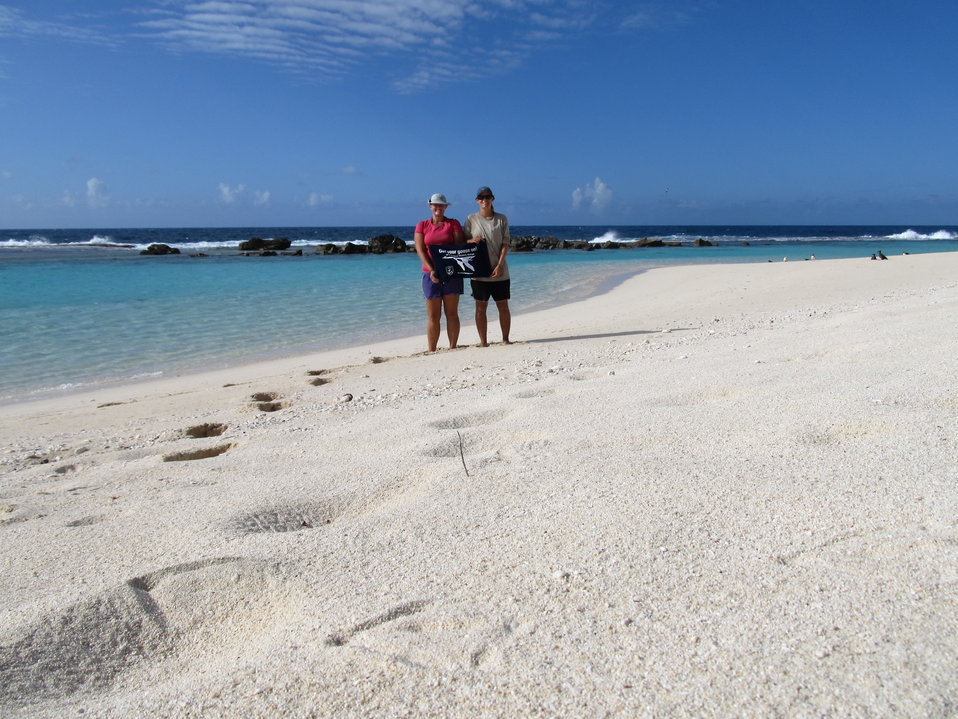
Get Your Goose On! - Laysan Style

Photo taken at Laysan Island in the Papahanaumokuakea Marine National Monument, Hawaiian Islands National Wildlife Refuge. Laysan is located approximately 800 miles northwest of Honolulu, Hawaii and is a remote field camp staffed year round for habitat restoration and population monitoring.